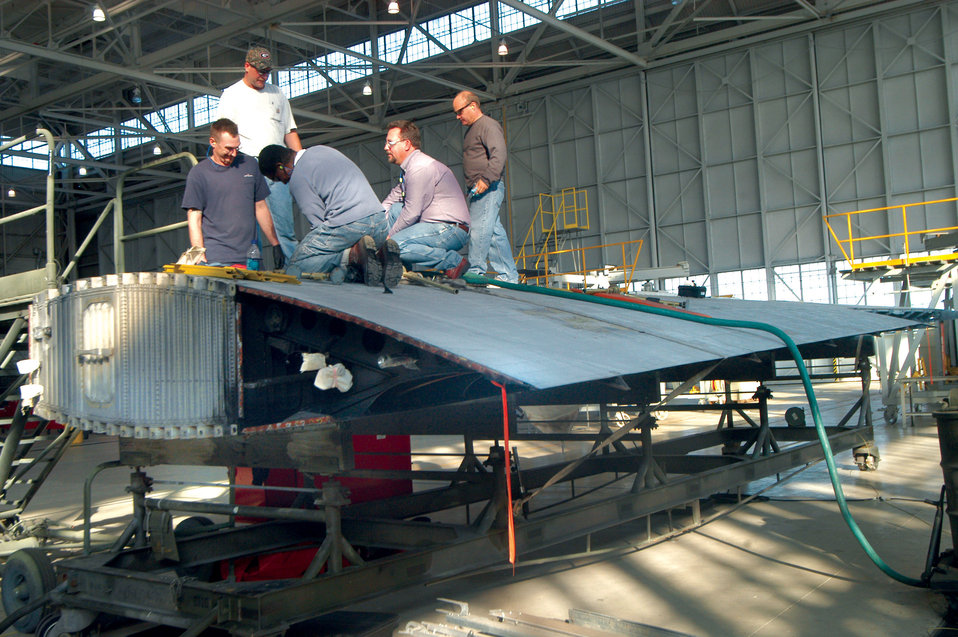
Cooperative effort nets C-130 wing for hands-on training

C-130 Hercules workers receive hands-on training from Doug Wall atop the wing during a class at Robins Air Force Base, Ga. Robins AFB units combined forces to procure a wing so students of the 373rd Training Squadron's Field Training Detachment could have hands-on training.